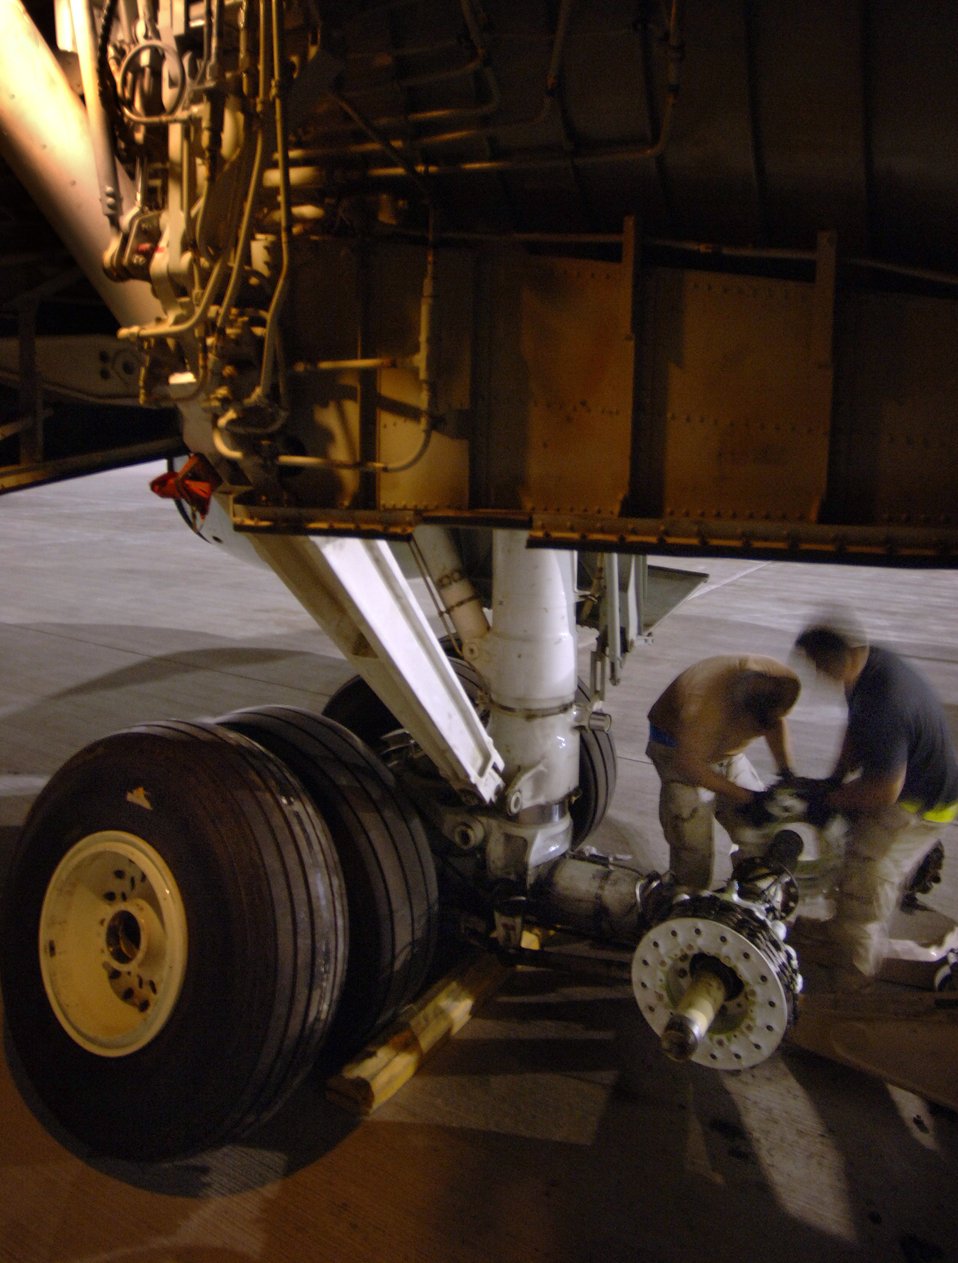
Maintainers turn Rivet Joint

Staff Sergeants Steven Lantz and John Terlaje change out both tires and a 250-pound brake assembly on the main landing gear of a RC-135 Rivet Joint aircraft that is forward deployed in Southwest Asia. Both crew chiefs are deployed from the 55th Aircraft Maintenance Squadron at Offutt Air Force Base, Neb.